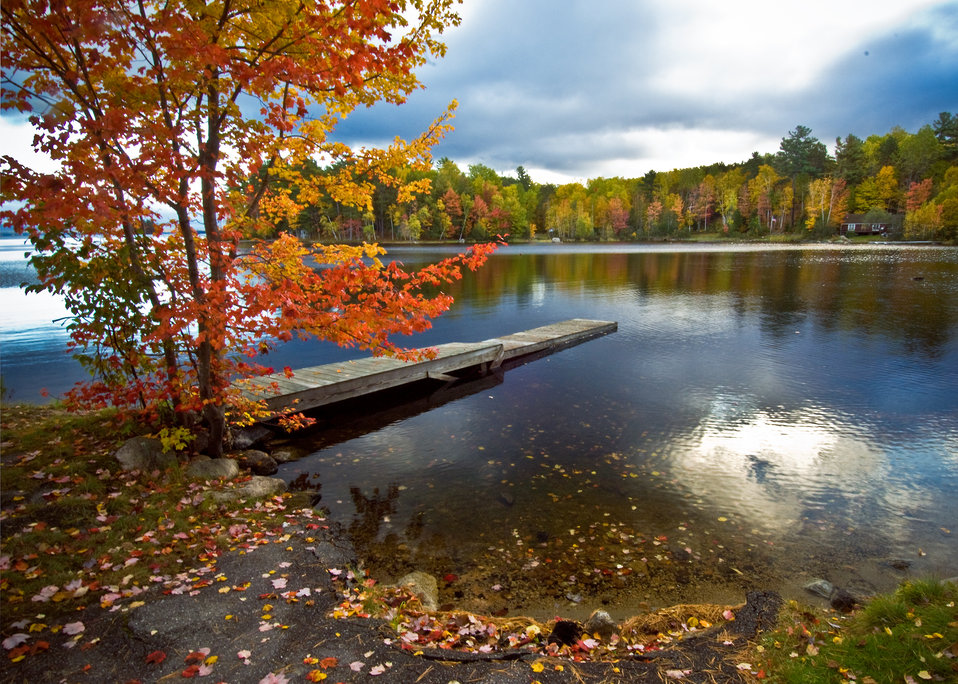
Peaceful solace is offered along a lakeshore in the White Mountain National Forest in Maine. It would be difficult for a traveler not to find a site worthy of a great painting or a great photograph.